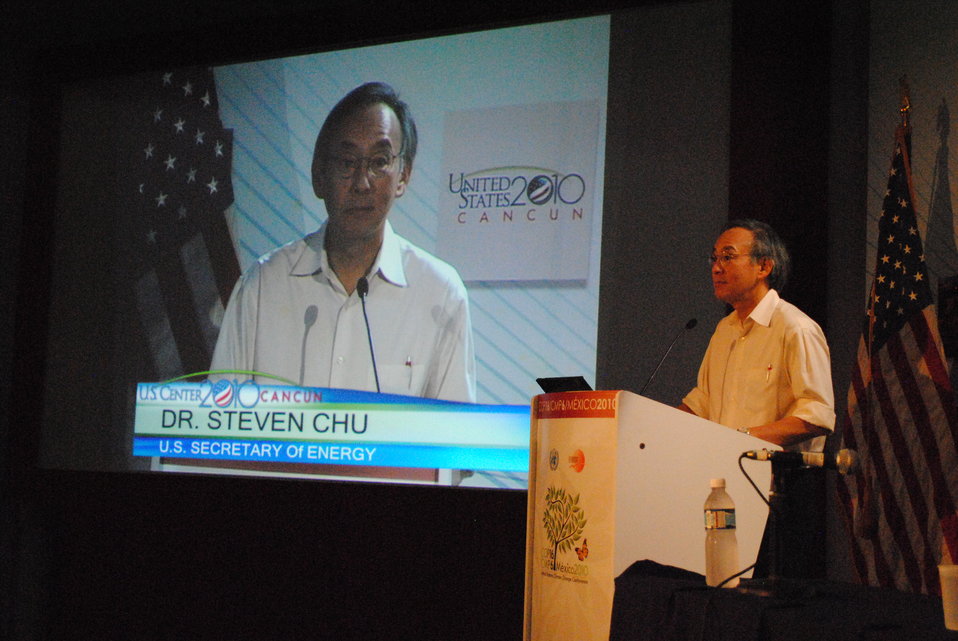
Secretary Chu Addresses the U.S. Center